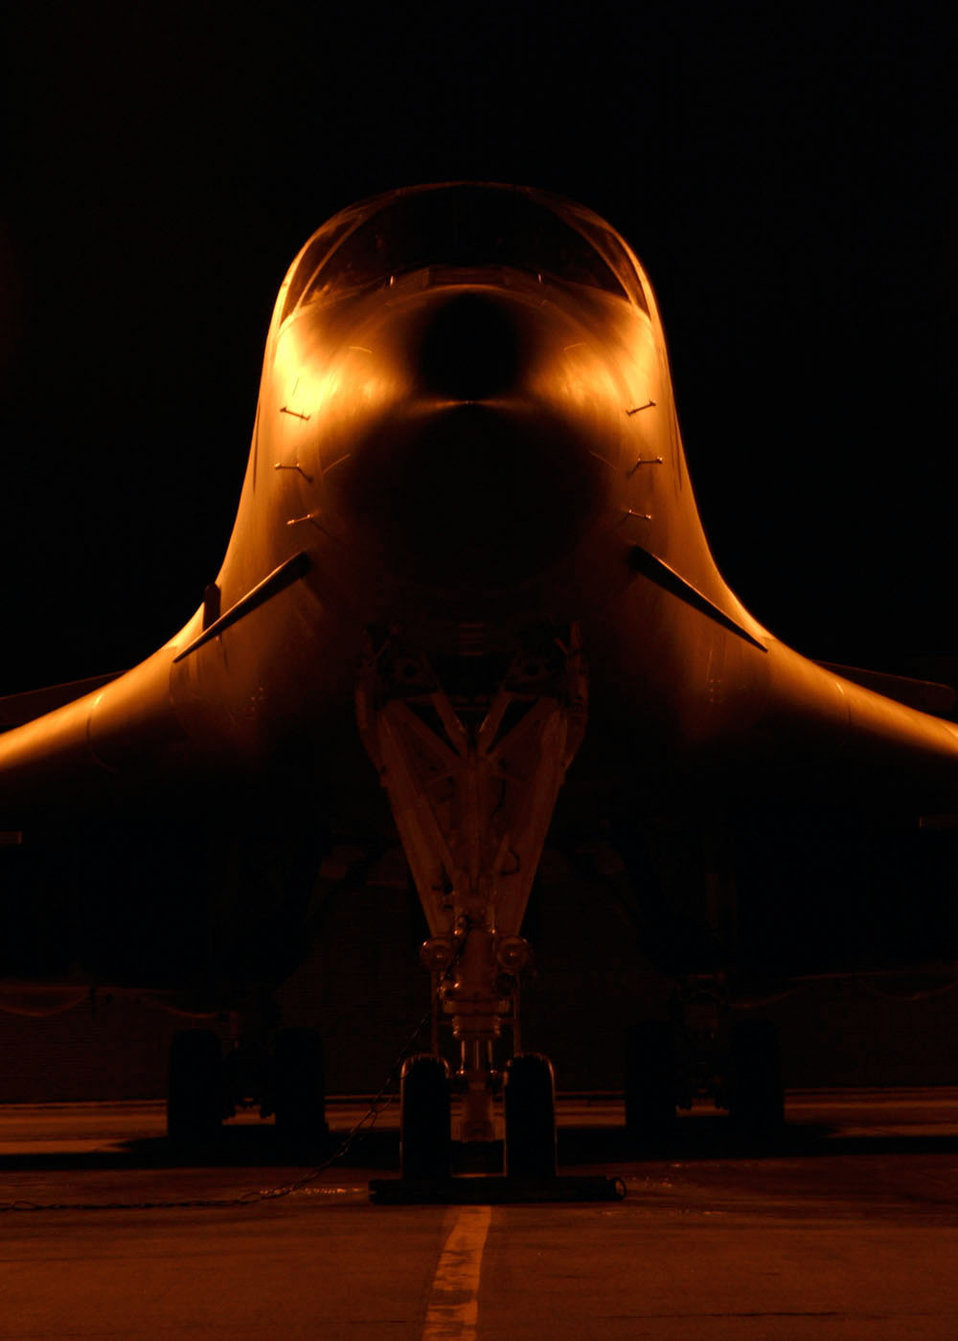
The Lancer waits

ELLSWORTH AIR FORCE BASE, S.D. -- A B-1 Lancer from the 28th Bomb Wing sits ready for deployment. Ellsworth aircraft and airmen are deploying to support operations Enduring Freedom and Iraqi Freedom.